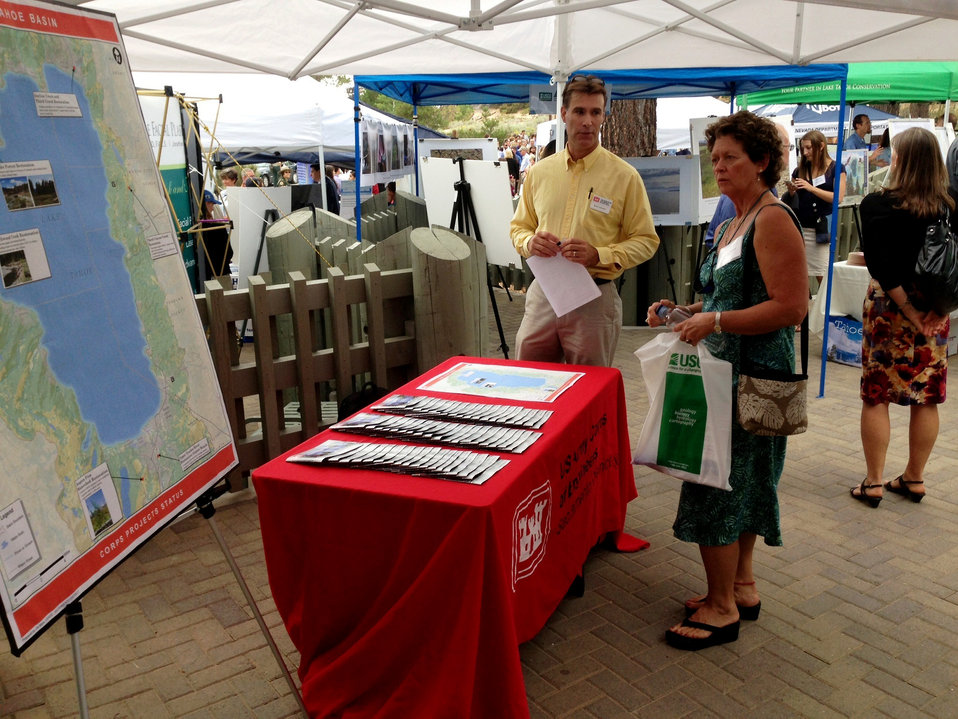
Sharing our progress

130819-A-QE256-117 - Environmental manager Brad Johnson speaks with a guest at the U.S. Army Corps of Engineers booth at the 17th Annual Lake Tahoe Summit at Sand Harbor State Park, Nev., Aug. 19, 2013. The U.S. Army Corps of Engineers joined former Vice President Al Gore, U.S. Sen. Harry Reid of Nevada, U.S. Sen. Diane Feinstein of California, California Governor Jerry Brown, Nevada Governor Brian Sandoval and partner agencies to celebrate progress in restoring Lake Tahoe. The Corps is one of many agencies working to help “keep Tahoe blue” through various ecosystem restoration projects.